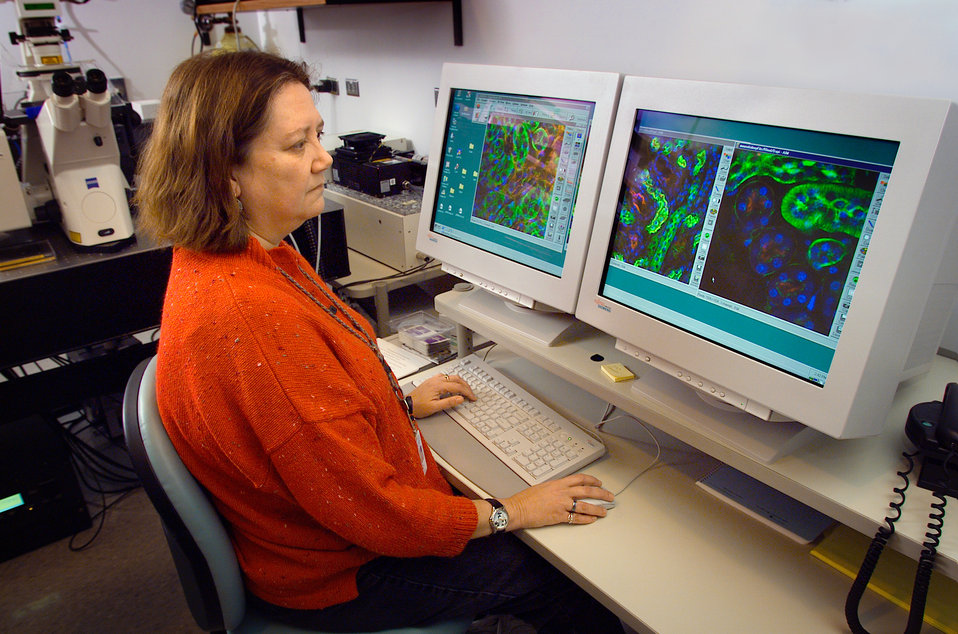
CDC scientists at work using a confocal microscope.